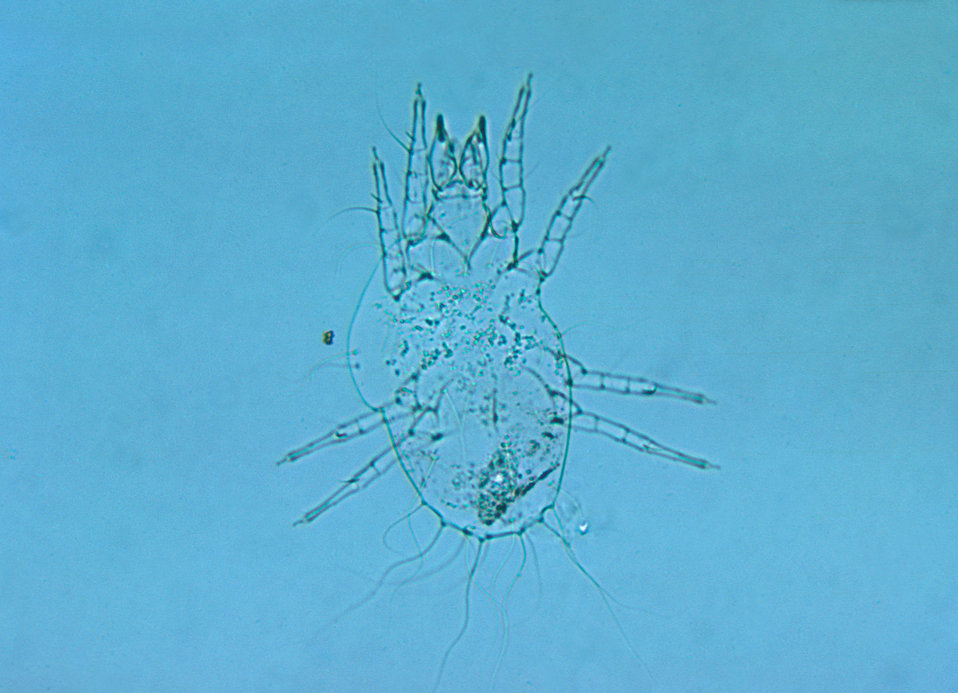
This is a photomicrograph of what is thought to be a member of the family of mites, Tyroglyphidae, which includes what are known as "stored-food" mites. Depicted here in this particular specimen, is the third nymphal stage of this creature's development, however, this is, indeed, a poor quality representation, and as such, should not be used for identification purposes.